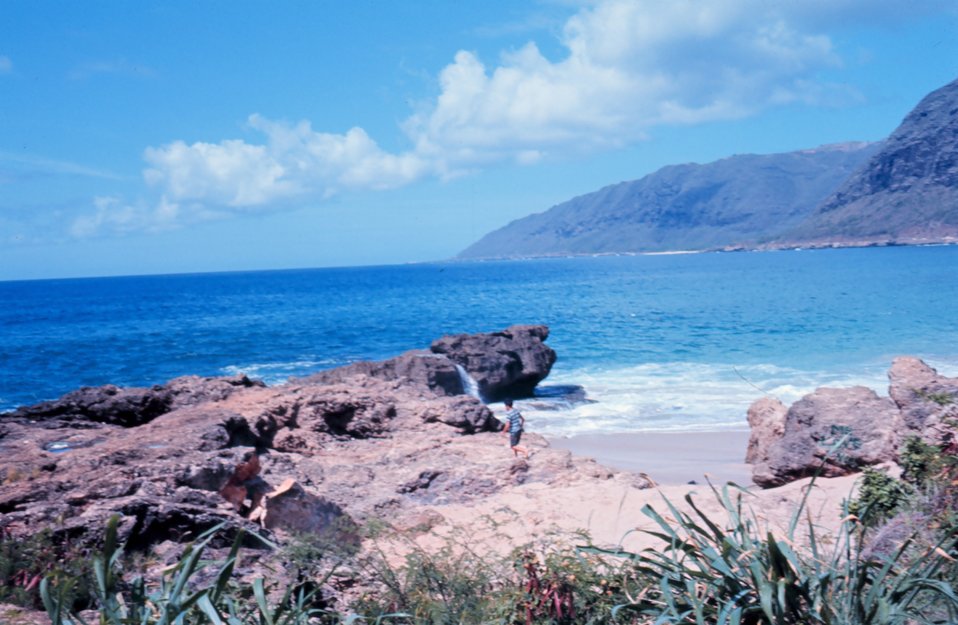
Waianae coast -southwest Oahu